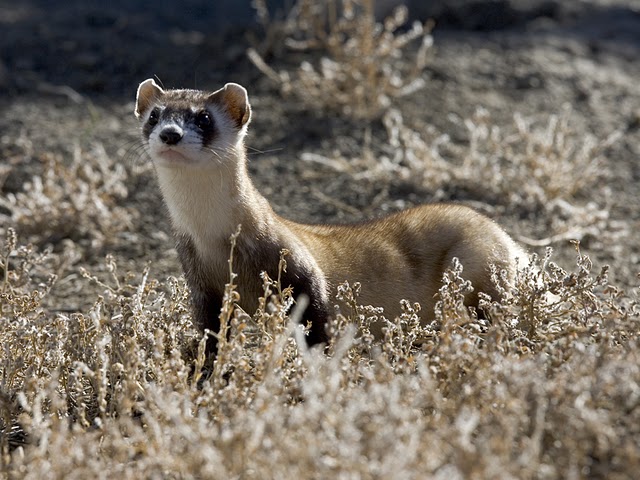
National Black-footed Ferret Conservation Center